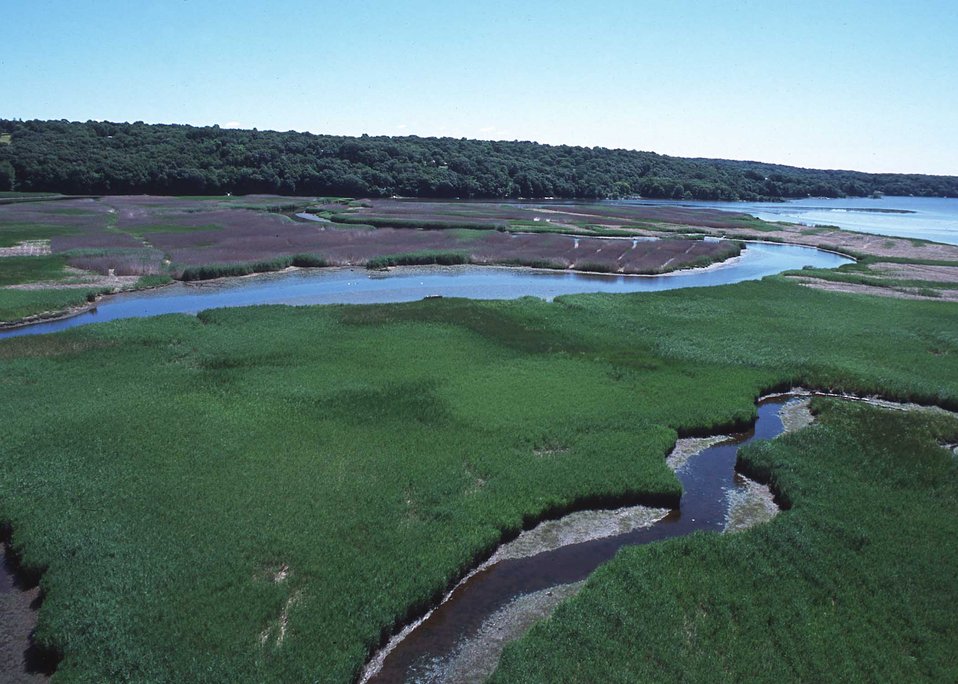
Connecticut River tideland habitat undergoing invasive plant control (light colored areas) and native plant community restoration.